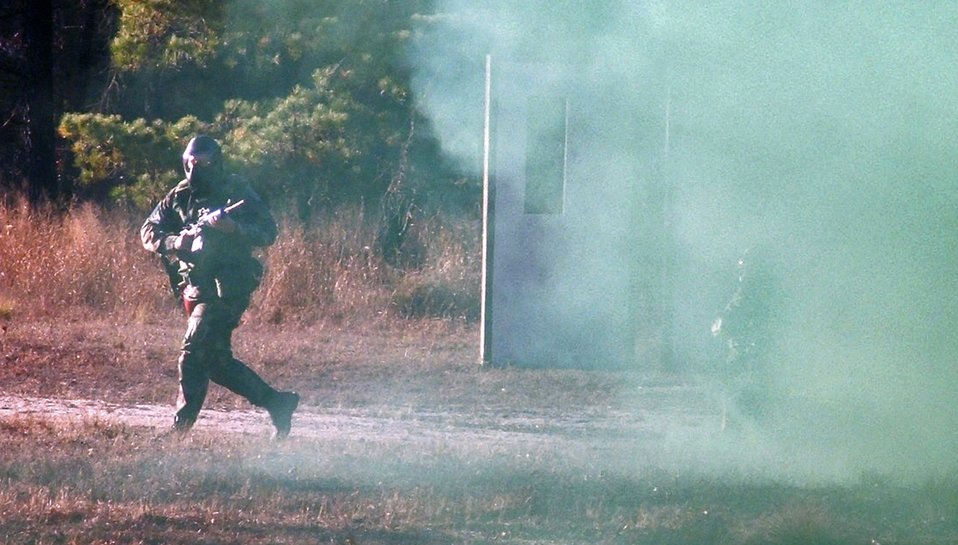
COMBAT INTERROGATOR COURSE 06-1

FORT DIX, N.J. (AFPN) -- An Airman participating in contingency skills training for the Combat Interrogator Course 06-1 moves during a scenario for close quarters battle. The class was taught by the 421st Combat Training Squadron at the Air Mobility Warfare Center, Fort Dix, Nov. 14.